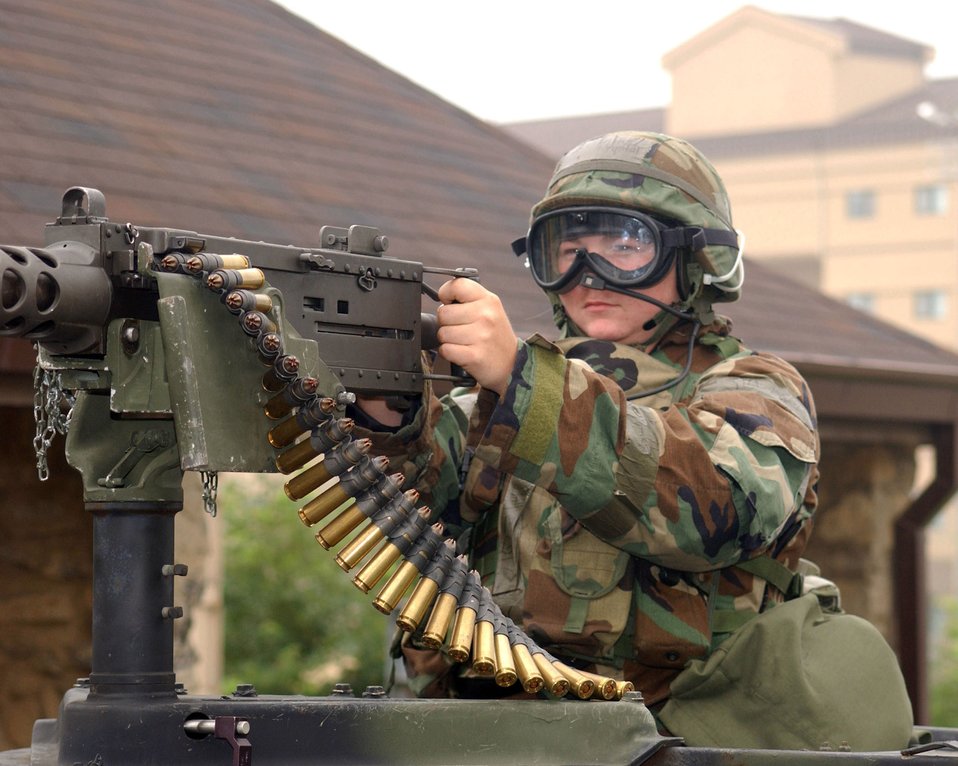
50 cal

OSAN AIR BASE, South Korea -- Senior Airman Krystal Ellington positions herself behind a .50 caliber machine gun after a simulated attack by opposing forces here. Airman Ellington is with the 51st Security Forces Squadron.